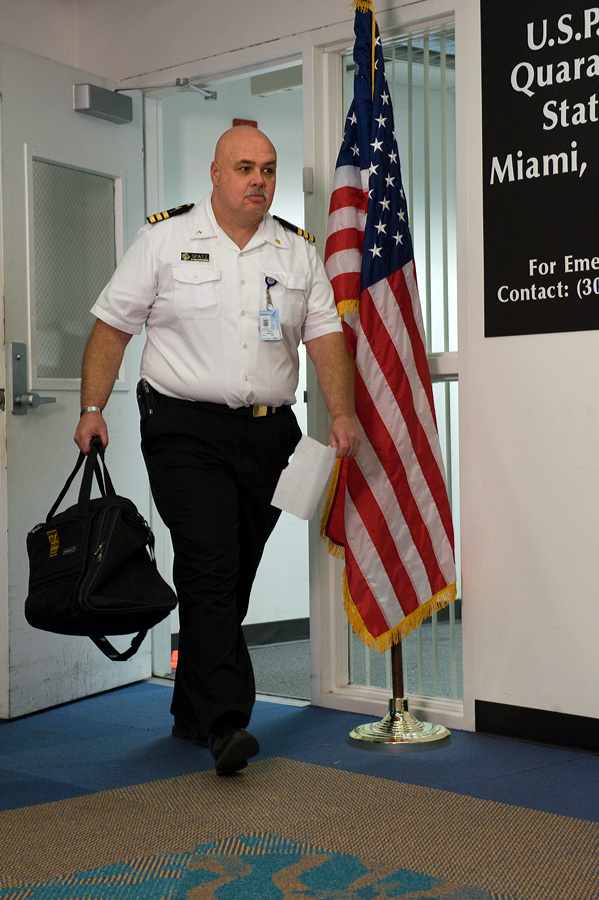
This image was captured during an October 2008 Preparedness Exercise involving a number of Federal and local agencies, including the Centers for Disease Control and Prevention (CDC).